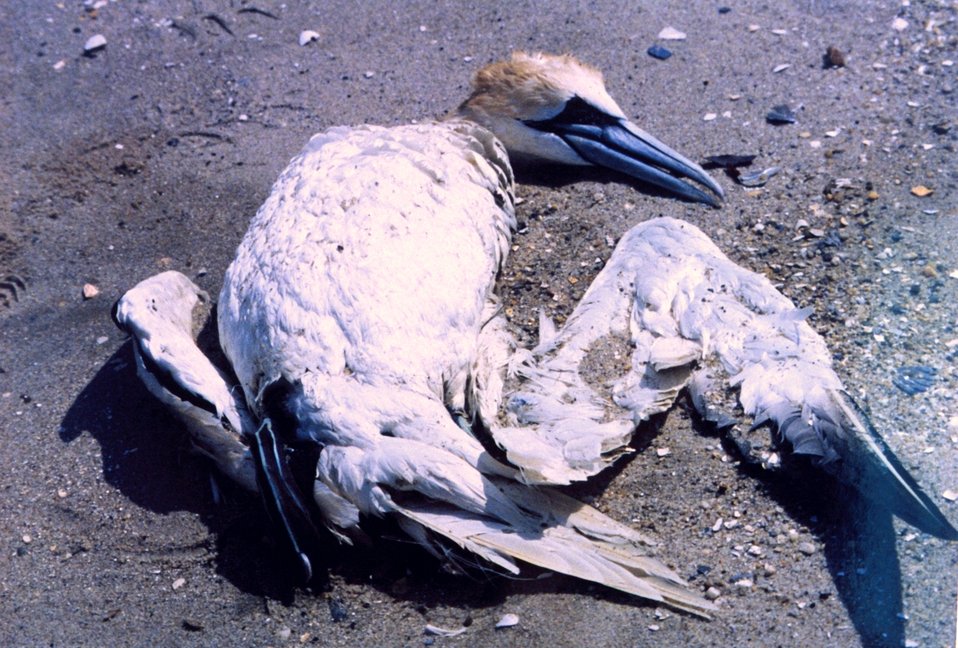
A Northern Gannet, somewhat north of its normal range, tangled in fishing line and drowned.